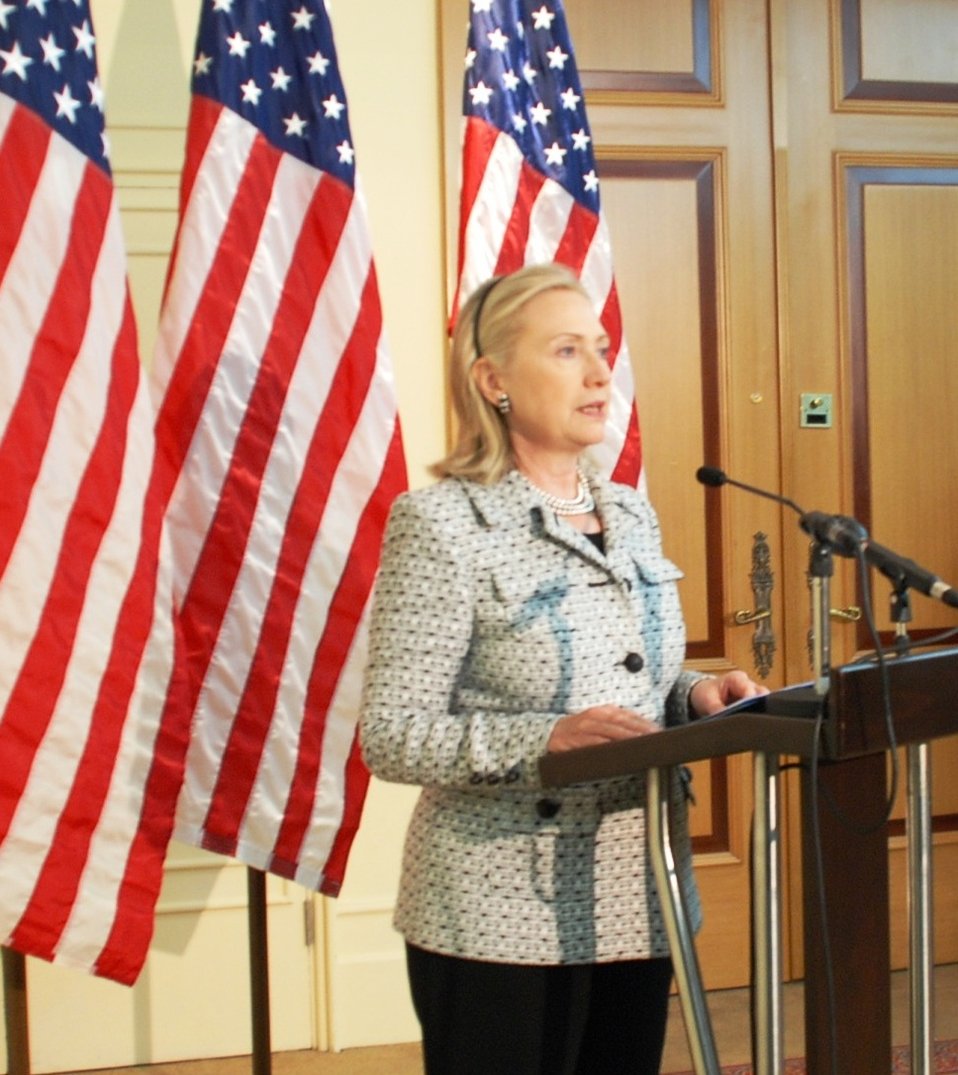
Secretary Clinton Addresses Reporters After Fourth Libya Contact Group Meeting

U.S. Secretary of State Hillary Rodham Clinton addresses reporters after participating in the fourth Libya Contact Group Meeting at the Çırağan Palace in Istanbul, Turkey, on July 15, 2011.